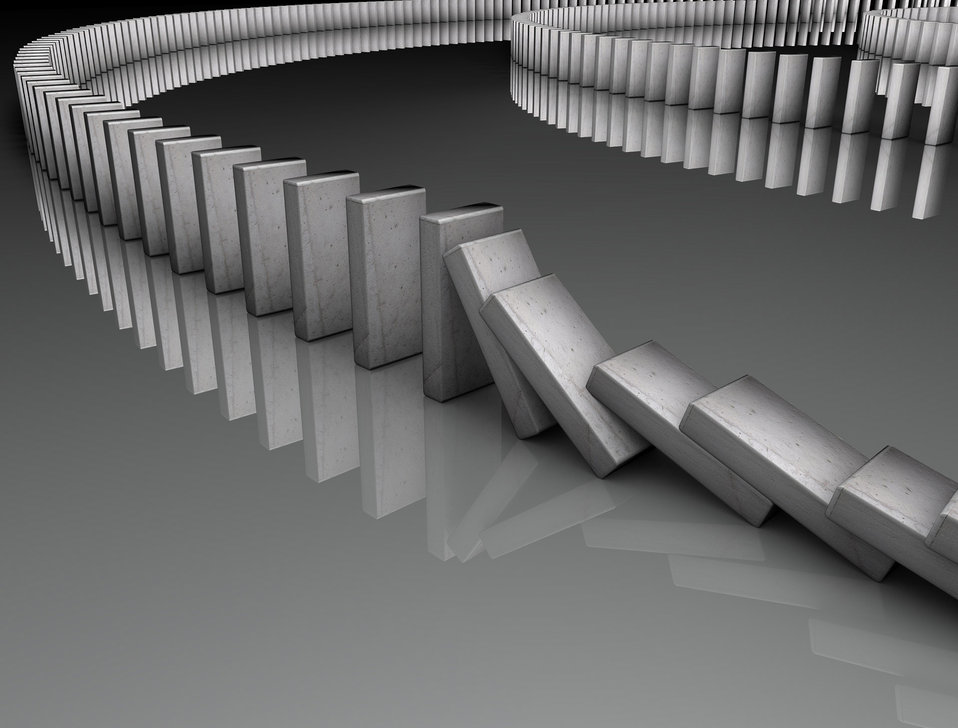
Domino.